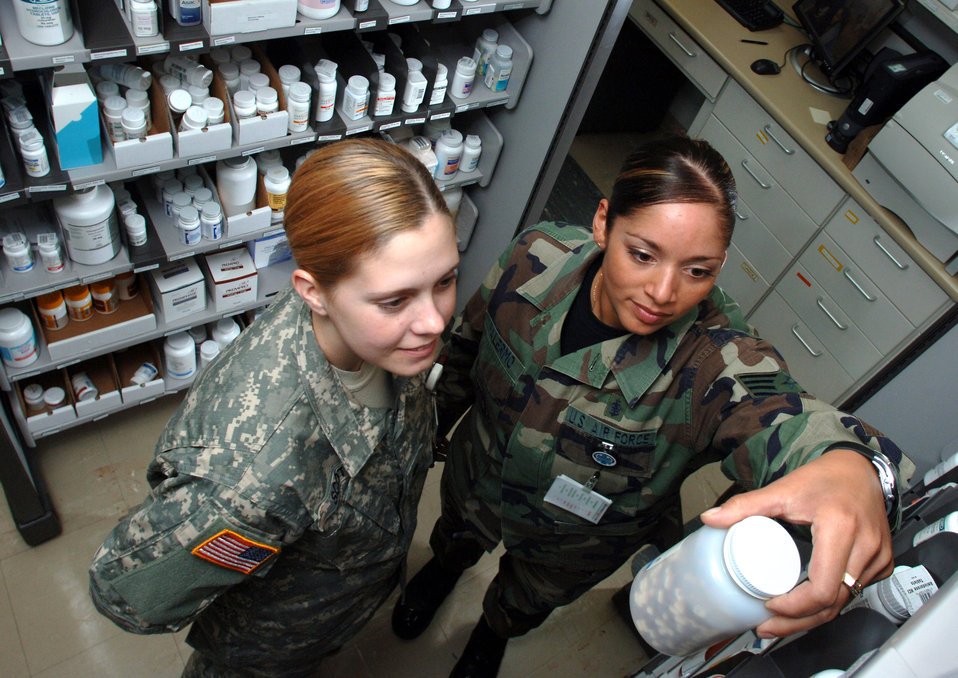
Army clinic's lone Airman manages pharmacy

Staff Sgt. Guanina Palermo (right) shows Army Spc. Michelle Scott what to look for while searching for out-of-date medicine at the health clinic?s pharmacy on Kleber Kaserne, Germany, on Wednesday, April 26, 2006. Sergeant Palermo, from Liverpool, N.Y., is a pharmacy technician and Specialist Scott, from Matoon, Ill., is an X-ray technician; both work in the health clinic on the Army post near Kaiserslautern.